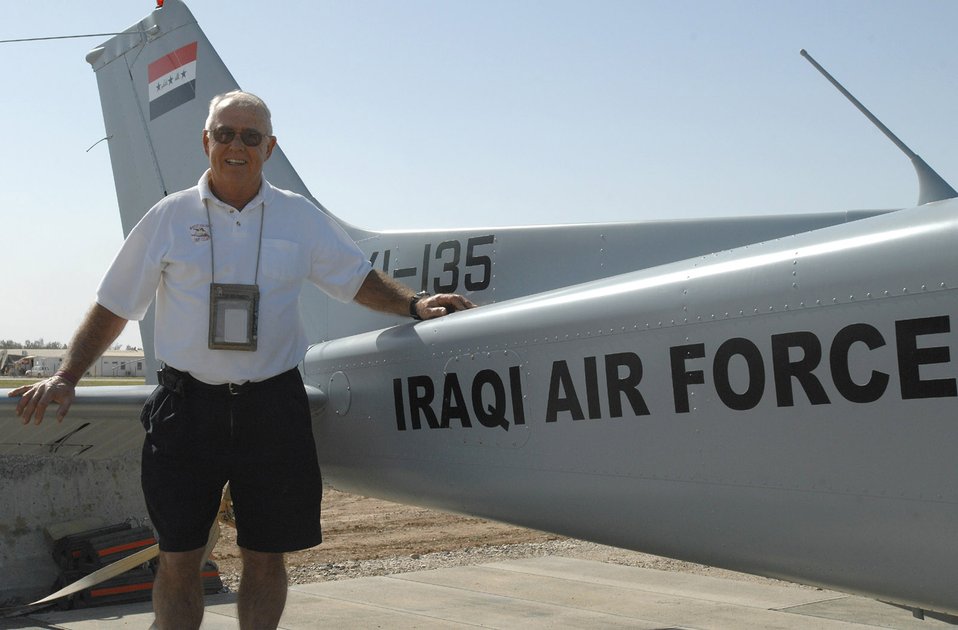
Retired Vietnam pilot supports war in Iraq

Retired Army Lt. Col. Lott Lawson inspects a Cessna 172 aircraft March 29 Kirkuk Air Base, Iraq. He is a site manager for the maintainence of Iraqi air force aircraft. As coalition forces continue reaching benchmarks to rebuild the Iraqi air force, this former U.S. Army helicopter has helped foreign pilots earn their wings throughout his military and civilian career during training programs in Vietnam, Saudi Arabia and Afghanistan.